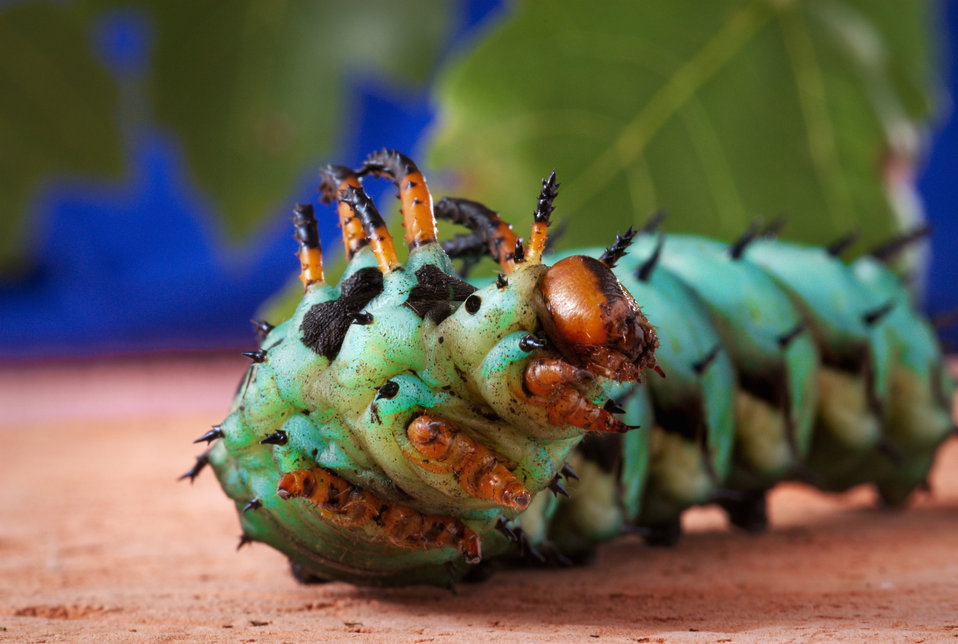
This 2008 image depicts a anterior inferior view of a Hickory Horned Devil caterpillar's head region, as the creature was rising up on its thoracic region body segments. It's hard to imagine, but keep in mind that this caterpillar is actually a developmental stage, or 'instar', through which the creature passes before becoming an adult, or 'imago' Regal Moth, Citheronia regalis. Just prior to entering its pupal stage, where it will metamorphose into the adult moth, the caterpillar will change its appearance, adopting more of a turquoise coloration, which looked to be the case in the specimen photographed here.